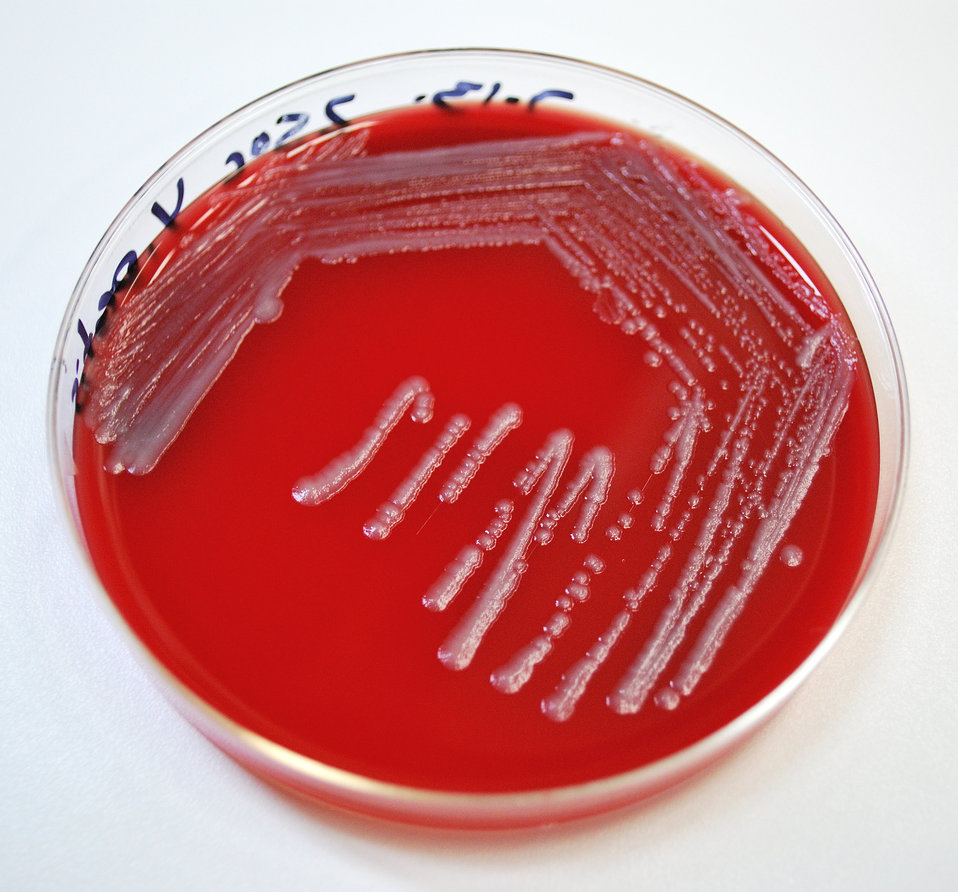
This image depicts a Petri dish containing a sheep's blood agar (SBA) medium, which had been inoculated with Gram-negative Yersinia pestis bacteria. Y. pestis is the pathogen responsible for causing human plague. This was the appearance of the colonial growth after 96 hours of incubation at 25� C.